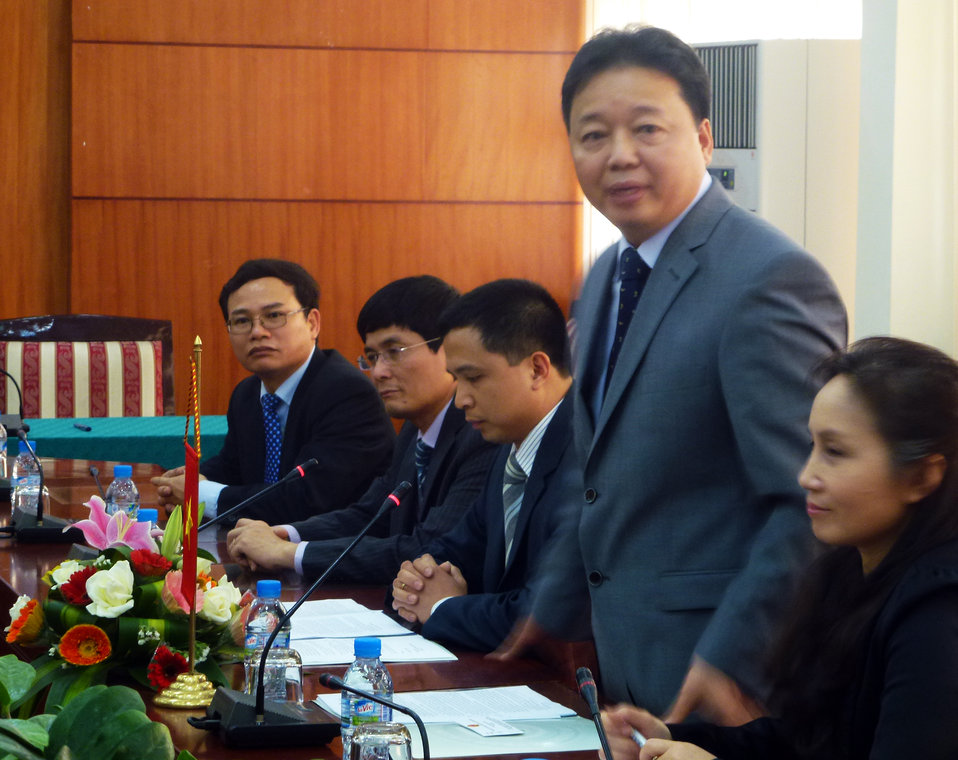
U.S.-Vietnam MOU on Low Emissions Development Strategies Signing Ceremony